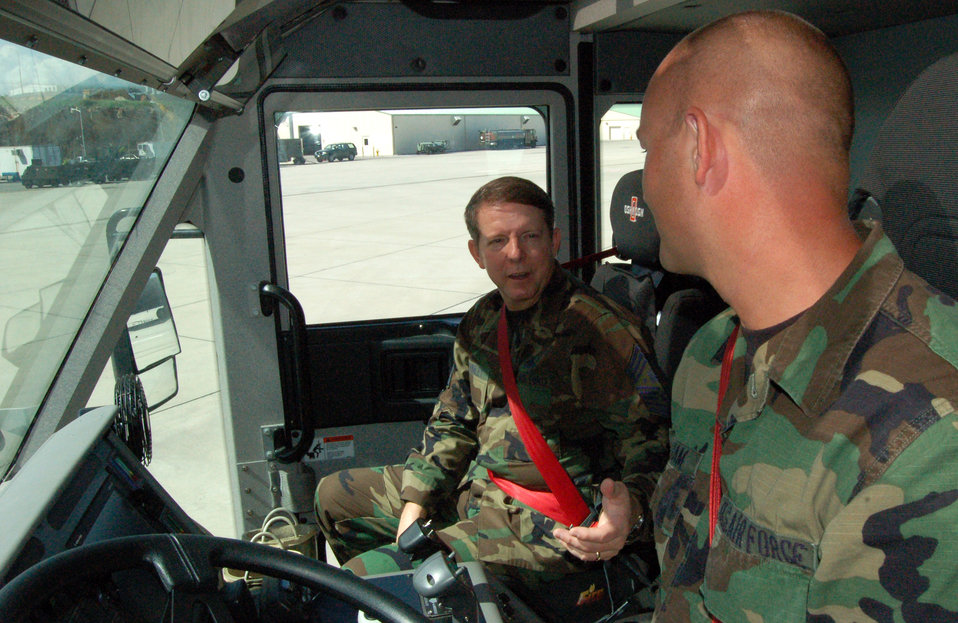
CMSAF visits Southern Command Airmen

Chief Master Sgt. of the Air Force Rodney J. McKinley talks to firefighter Staff Sgt. Ron Wareham about his fire truck Dec. 14 at Forward Operating Location Curacao, Netherlands Antilles. The chief stopped at the base to receive a mission orientation, talk to Airmen about Air Force issues, and spread some holiday cheer. Sergeant Wareham is a guardsman deployed to Curacao from the 174th Fighter Wing at Syracuse, N.Y.